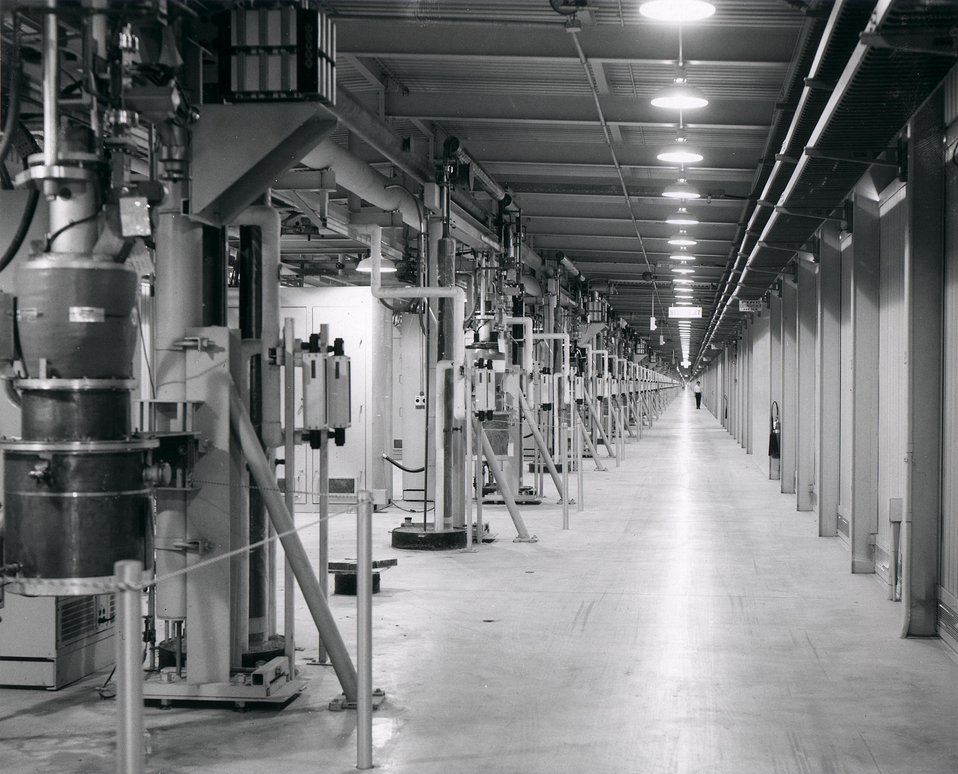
The Klystron Gallery above the Stanford Linear Accelerator (SLAC) tube. Circa 1968.